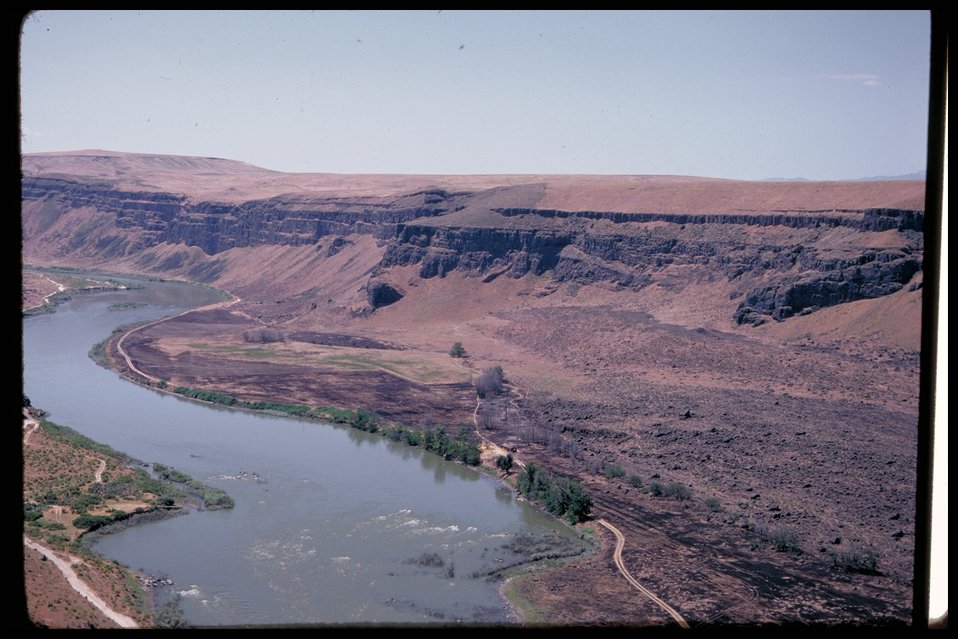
Birds of Prey National Conservation Area BOP Owyhee Field Office LSRD Lower Snake River District